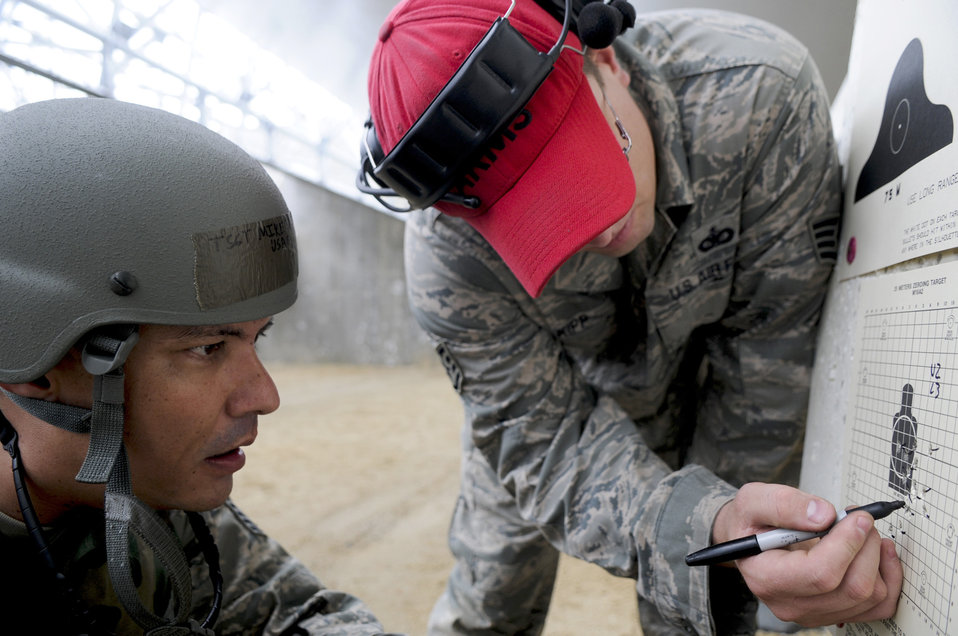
New firing range

Tech. Sgt. Michael Tateishi watches as Staff Sgt. James Kipp indicates sight corrections on a zeroing target May 24, 2011, at the combat arms firing range at Kadena Air Base, Japan. Renovations began due to the dangerous conditions at the former combat arms area. Sergeant Tateishi is the 18th Wing Public Affairs chief of operations, and Sergeant Kipp is an 18th Security Forces combat arms instructor.